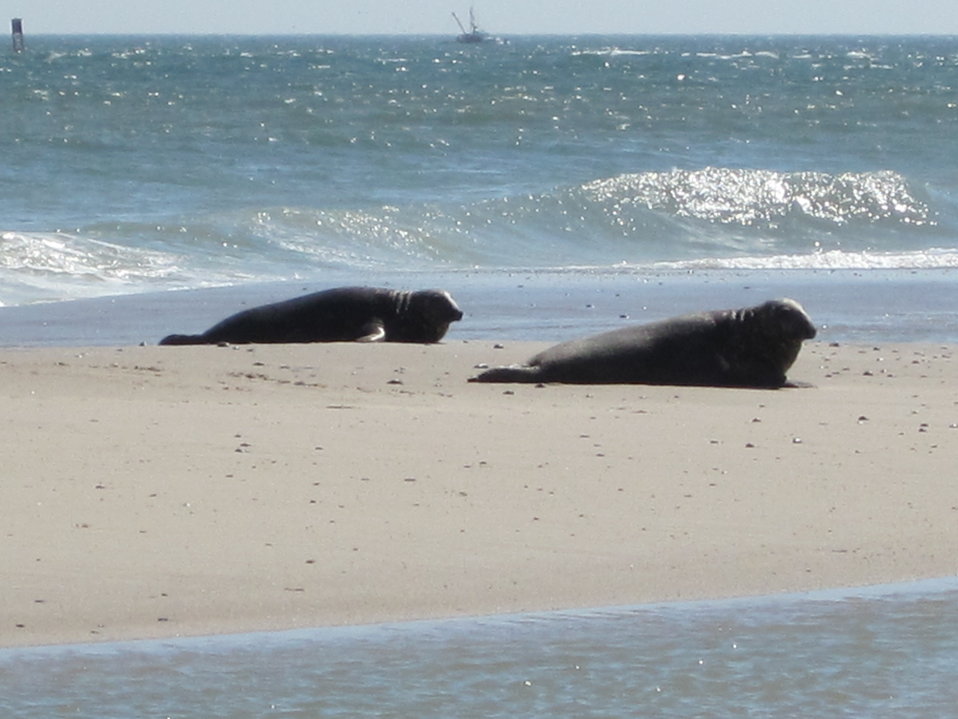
Seals on South Monomoy Island

Seals gather on South Monomoy Island, a few hundred yards from the lighthouse.

Credit: Keith Shannon/USFWS

Monomoy National Wildlife Refuge is part of the Eastern Massachusetts National Wildlife Refuge Complex.